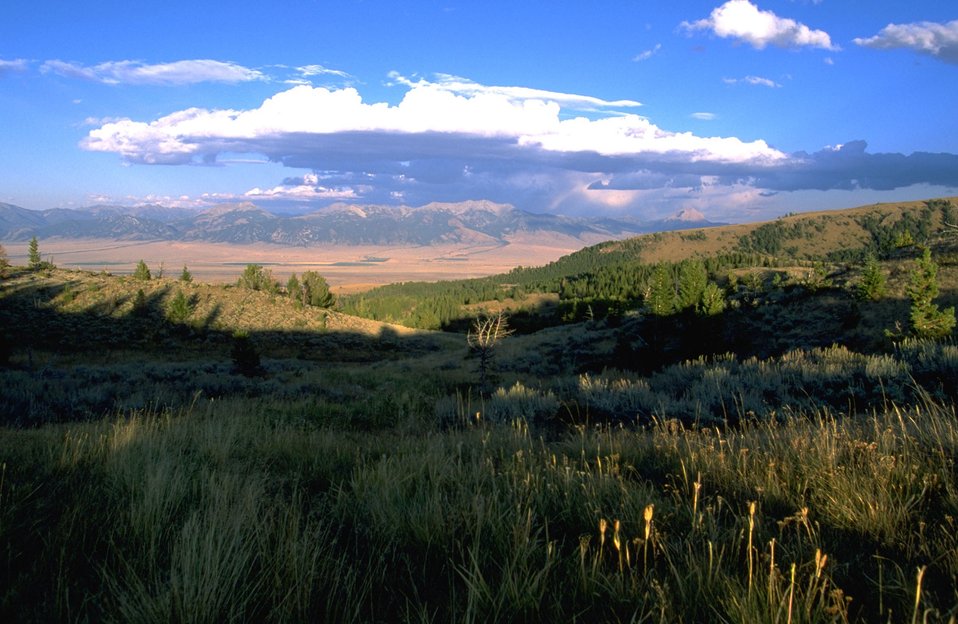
Ominous clouds over a valley in the Study Area